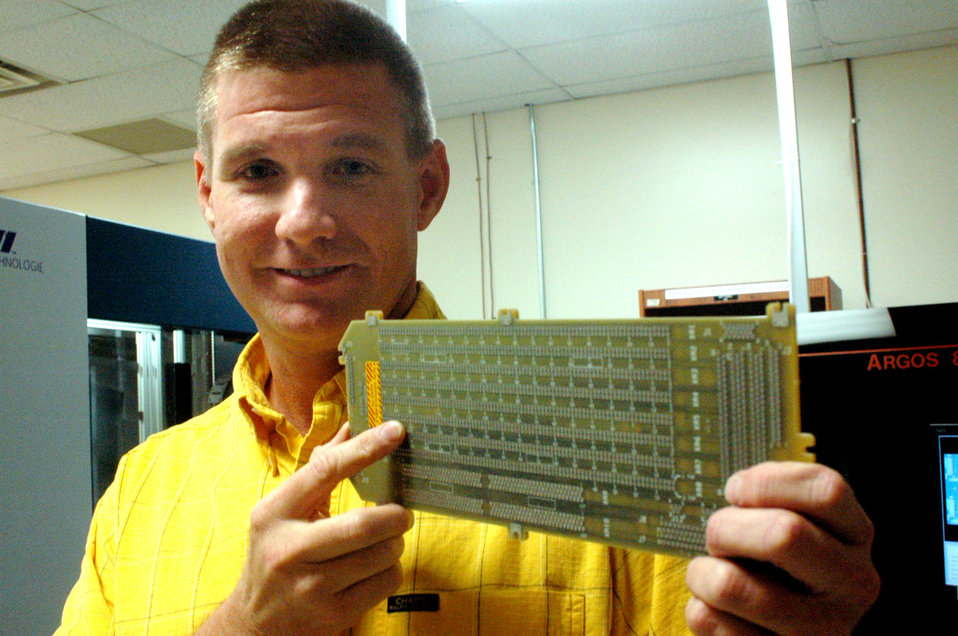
Robins engineer earns DOD award

Marty Shepard holds a finished back panel used in a computer system April 2 at Robins Air Force Base, Ga. Mr. Shepard, the lead manufacturing engineer from the 402nd Electronics Maintenance Group, won the 2006 Department of Defense Value Engineering Achievement Award.